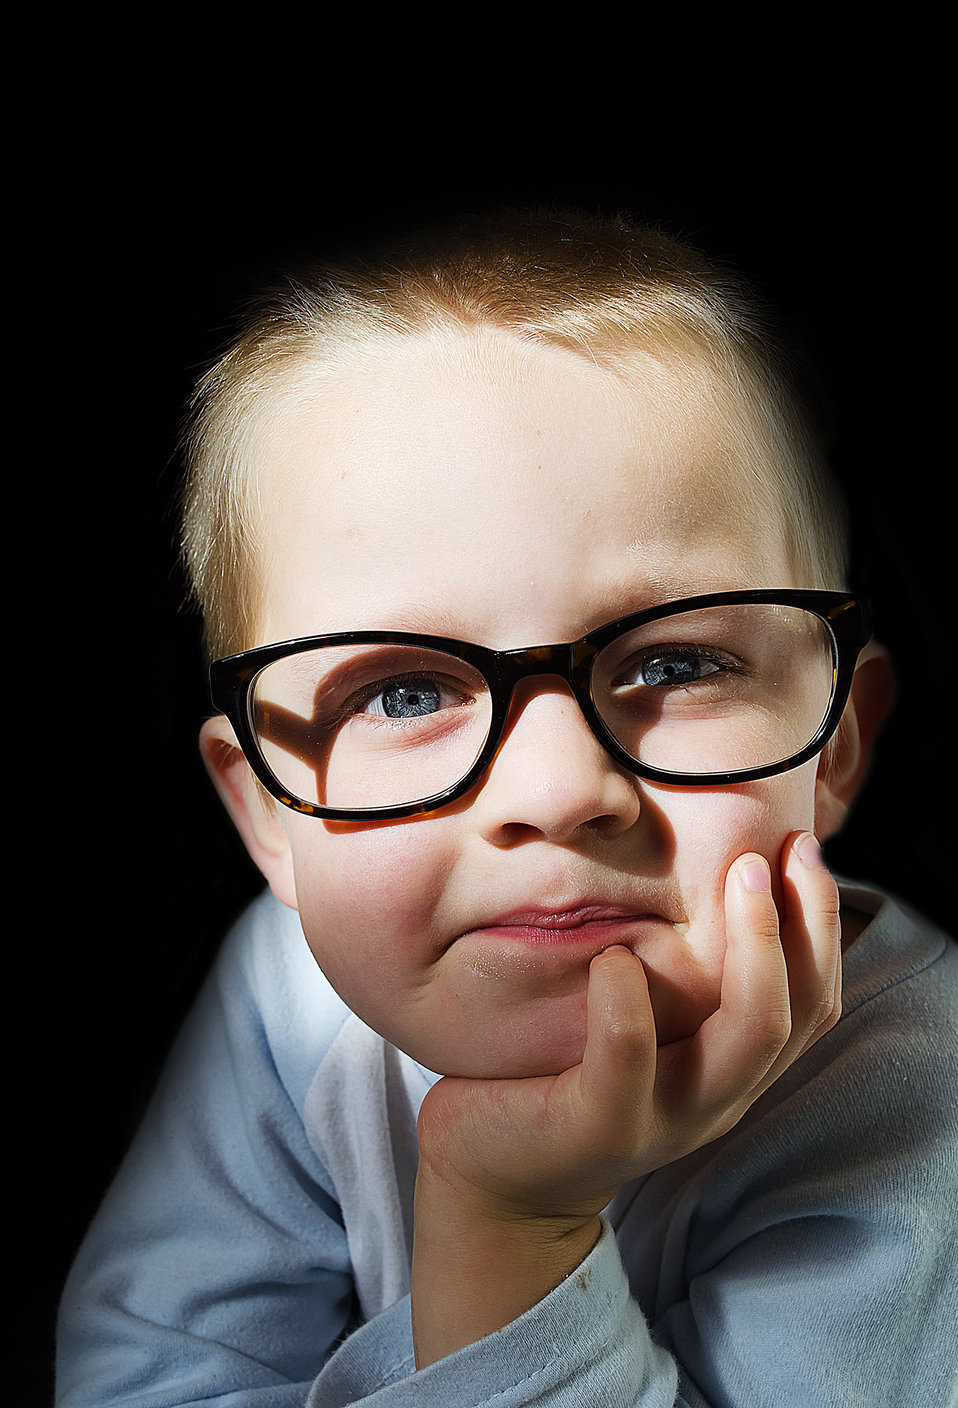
Child and optical glasses.